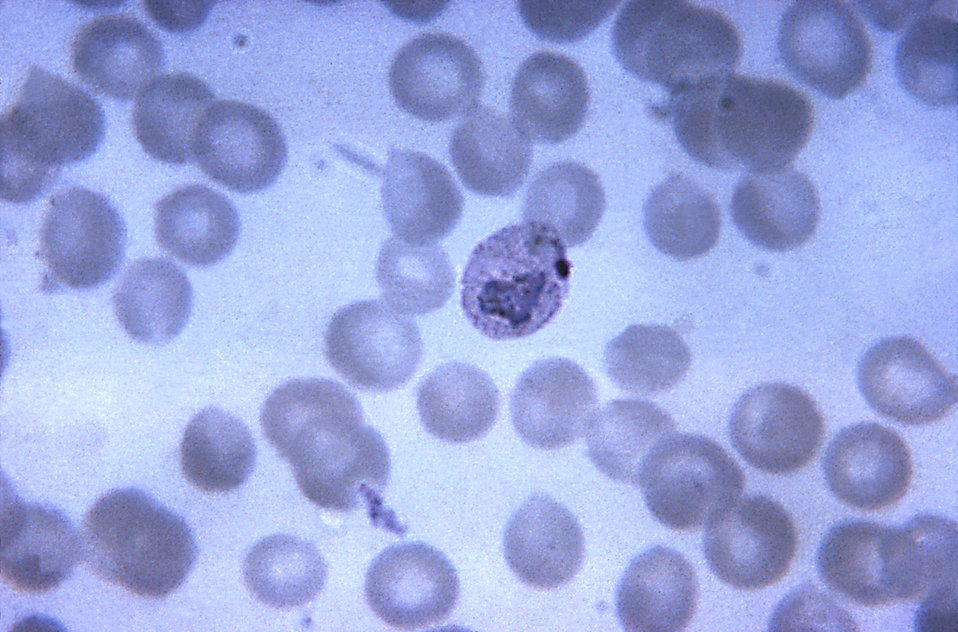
This thin film micrograph depicts a growing P. vivax trophozoite with conspicuous pigment granules, Magnified 1125X.